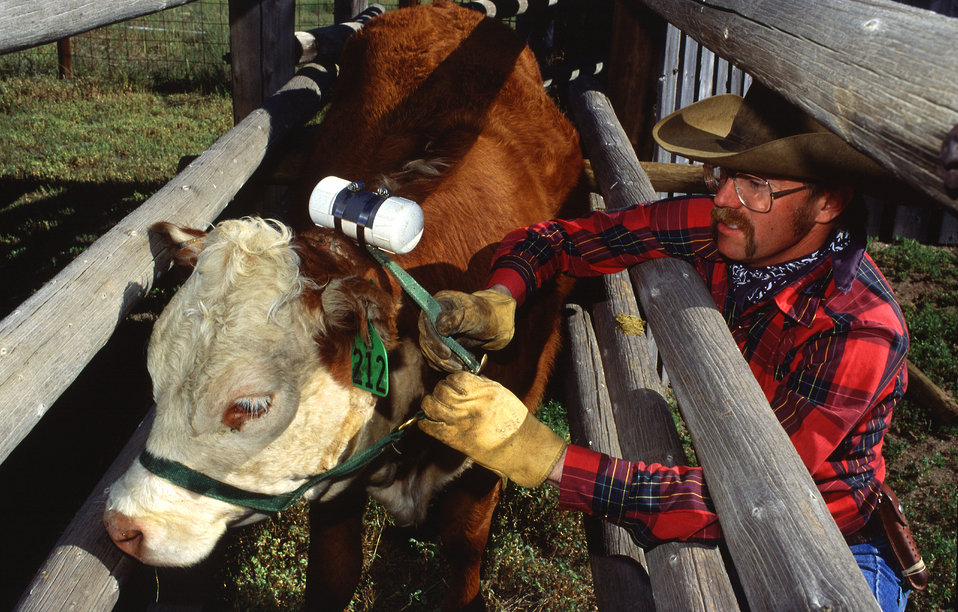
The sensing unit that U.S. Department of Agriculture (USDA) Agricultural Research Service (ARS) technician Jeff Thomas is attaching to the cow records motion and other data so scientists can determine how much time this steer spends grazing each day.